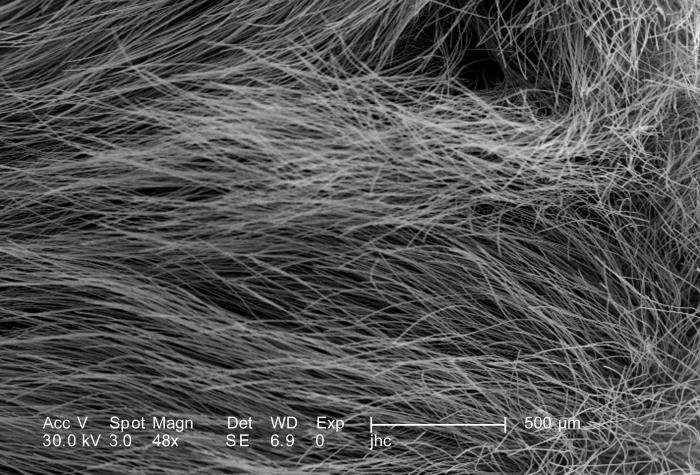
Under a low magnification of 48X, this scanning electron micrograph (SEM) revealed some of the ultrastructural morphology located on the head region of an unidentified white moth, which had been found deceased on the ground in the suburbs of Decatur, Georgia. In this particular view, what appears to be wavy, wind-blown grass, is actually a tuft of exoskeletal sensorial 'hairs' known as 'setae', located atop the insect's head.